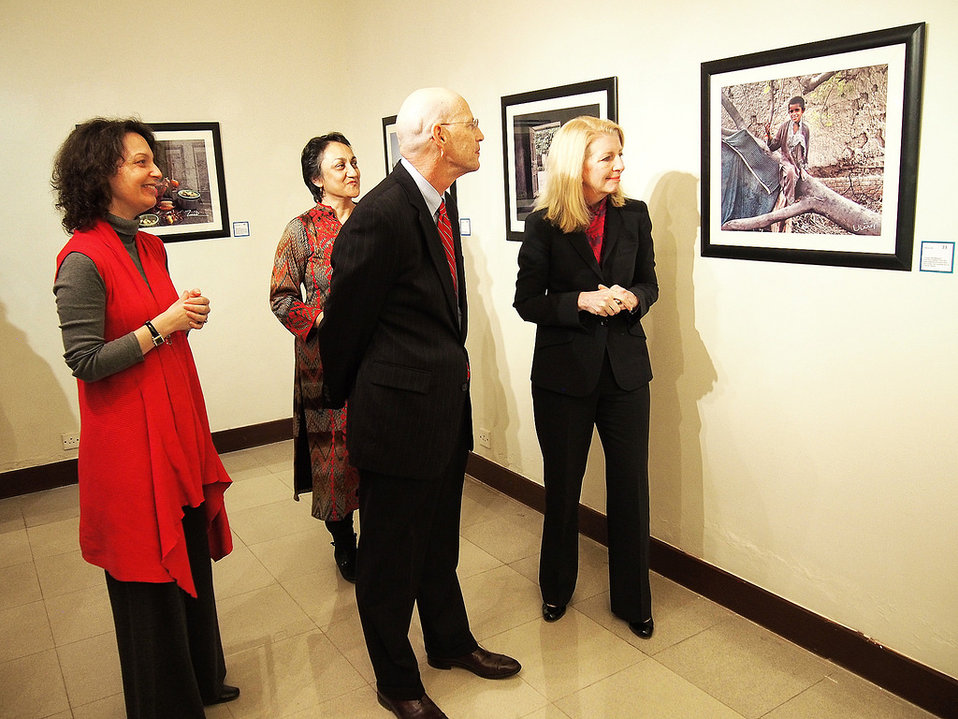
Catherine Russell, U.S. Ambassador-at-Large for Global Women’s Issues and USAID Pakistan Mission Director Gregory Gottleib attend a photographic exhibition featuring the work of acid attack survivors February 12, 2014 at Pakistan National Council of the Arts.

The event was sponsored by USAID and its partner, the Aurat Foundation, which implements the Gender Equity Program (GEP), a program focused on addressing women’s access to justice. The photographers are beneficiaries of the Acid Survivors Foundation (ASF), a GEP grantee.